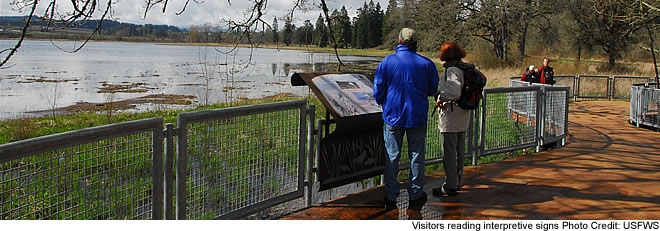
Interpretive signs - Tualatin River NWR

The patient observer will be rewarded with many wildlife viewing opportunities on the refuge.